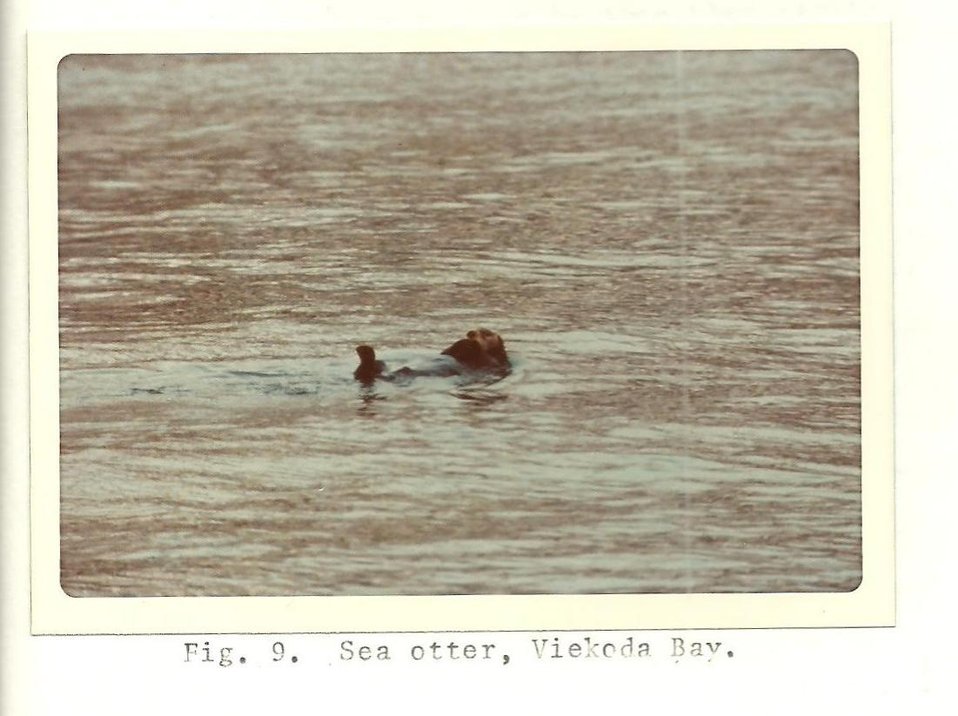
(1975) Sea Otter

Credit: USFWS

Source and Contact: Kodiak National Wildlife Refuge